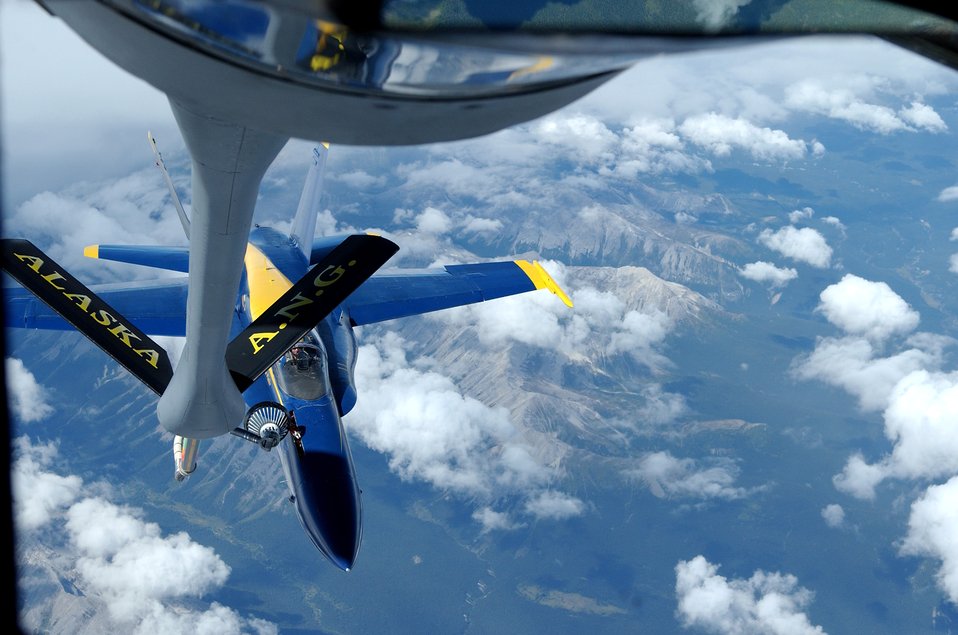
Blue Angels over Alaska

A KC-135 Stratotanker refuels an F/A-18 Hornet from the Navy's Blue Angels on its way from an air show at Elmendorf Air Force Base, Alaska, on Aug. 14. The KC-135 is with the 168th Air Refueling Wing at Eielson AFB, Alaska.